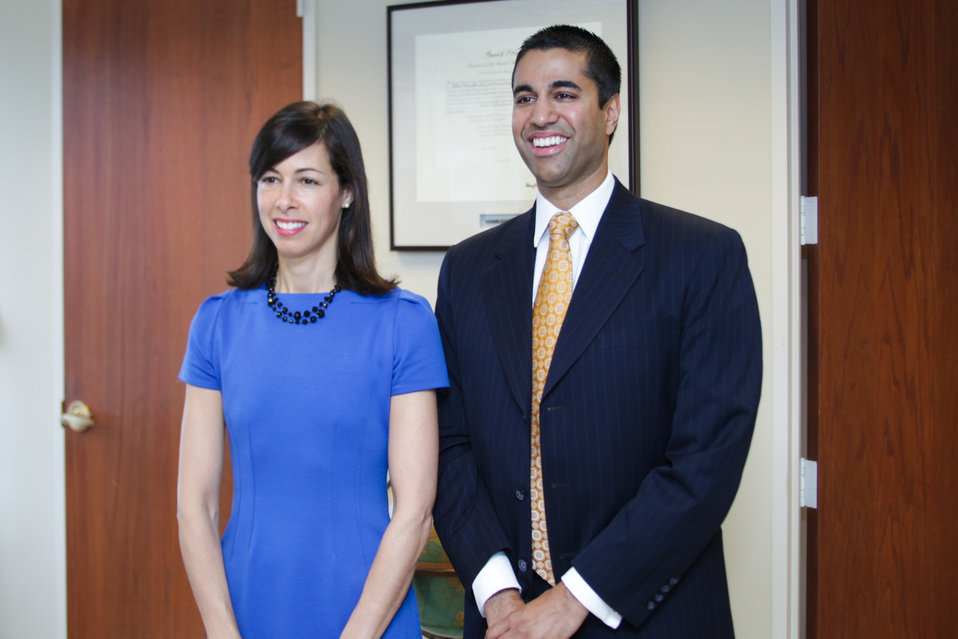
New FCC Commissioners - Jessica Rosenworcel and Ajit Pai

Jessica Rosenworcel and Ajit Pai wait to be sworn in as the two new Commissioners at the FCC headquarters in Washington, DC.

May 14, 2012.